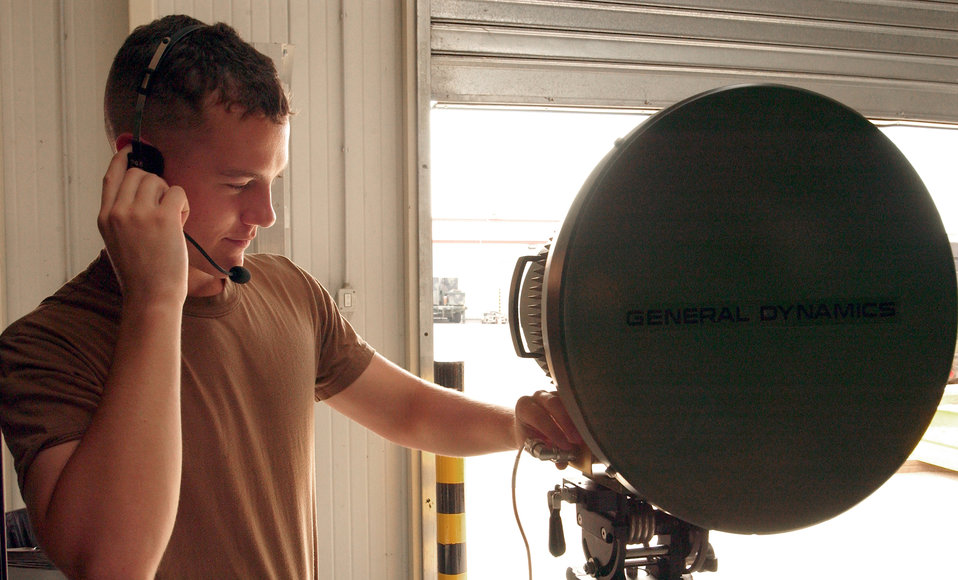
Hooking it up

AVIANO AIR BASE, Italy -- Airman Brian Allison installs a satellite terminal here July 9. Airman Allison is member of the 31st Communications Squadron.